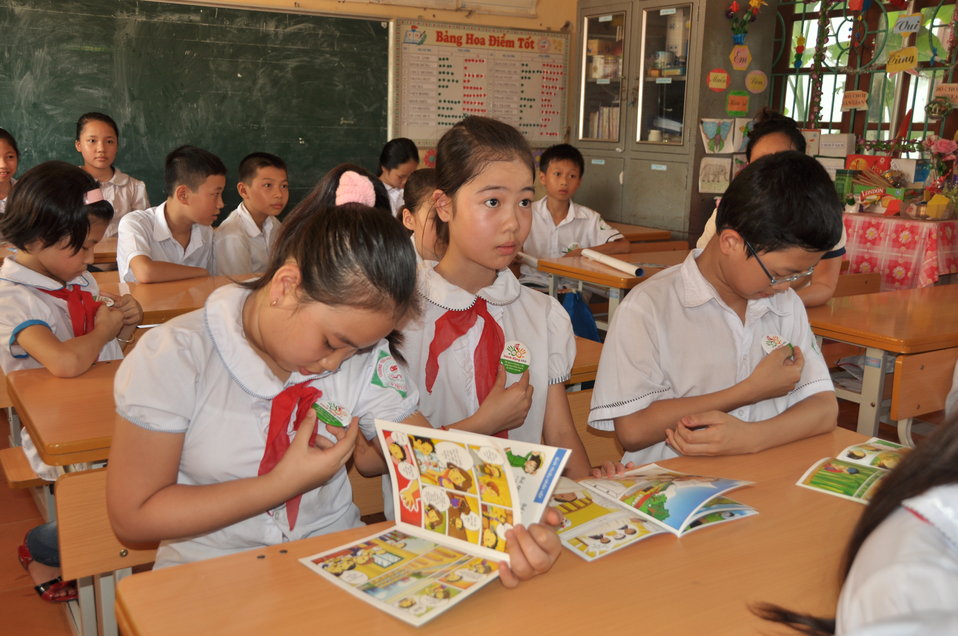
USAID supports deworming education and medication distribution in Bac Giang Province

May 20, 2013